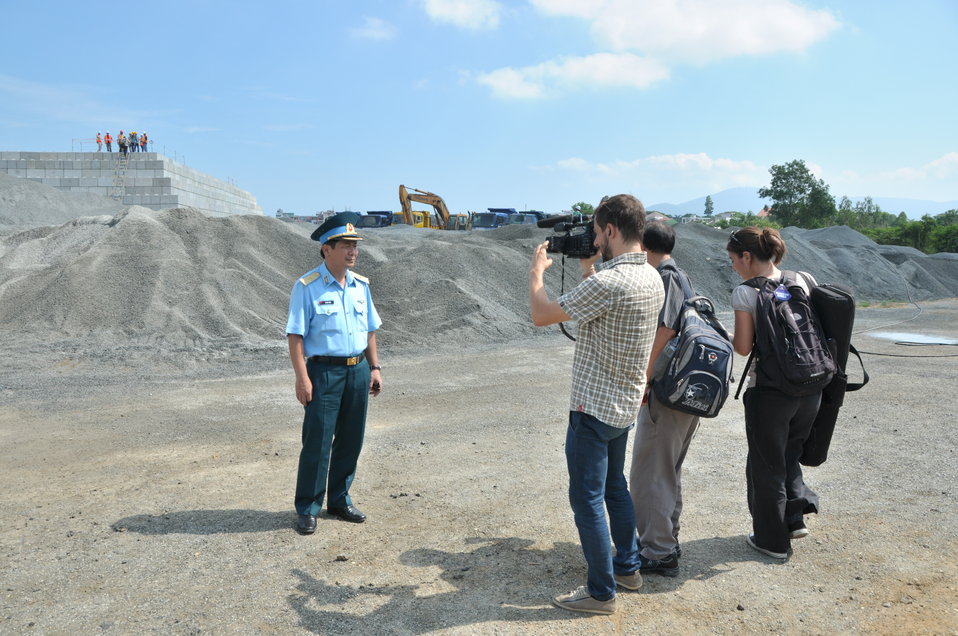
Media Tour of Environmental Remediation of Dioxin Contamination at Danang Airport

Danang, Vietnam
April 24, 2013